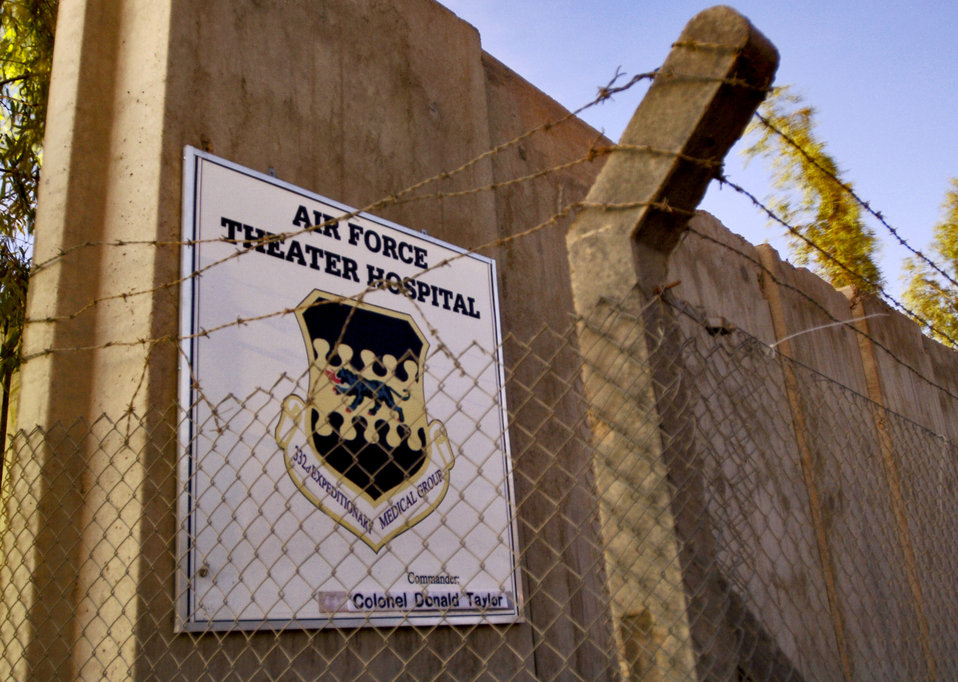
Air Force Theater Hospital

SOUTHWEST ASIA (AFPN) -- The Air Force Theater Hospital here cares for servicemembers and civilians. Two ABC News correspondents who were recently injured were cared for at the hospital.